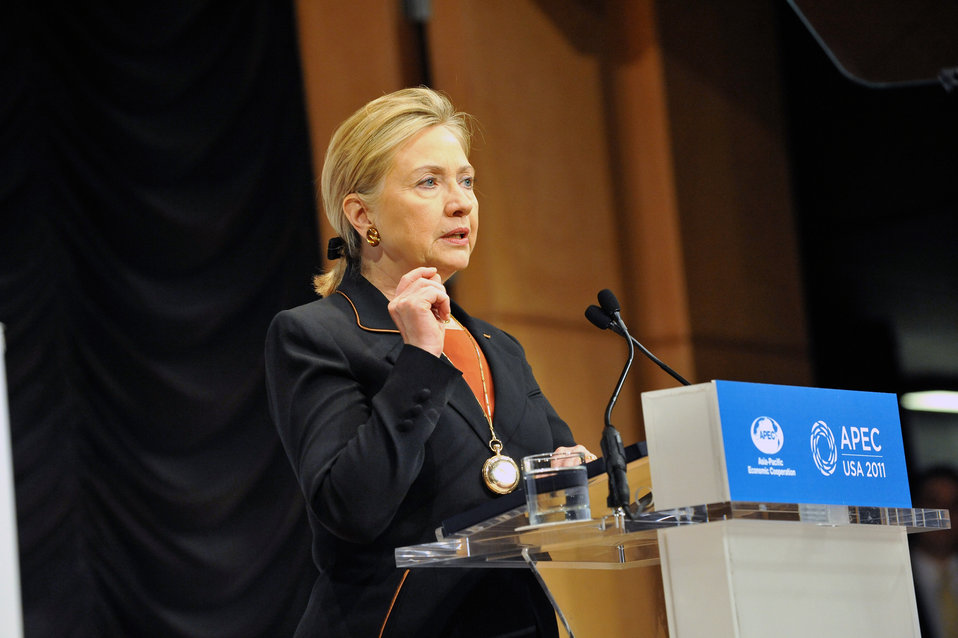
Secretary Clinton Delivers Remarks To Open Asia Pacific Economic Cooperation Meeting

U.S. Secretary of State Hillary Rodham Clinton delivers remarks to open the first Senior Officials Meeting (SOM) of the 2011 Asia Pacific Economic Cooperation (APEC) forum, in the amphitheater of the Ronald Reagan Building in Washington, D.C., on March 9, 2011.